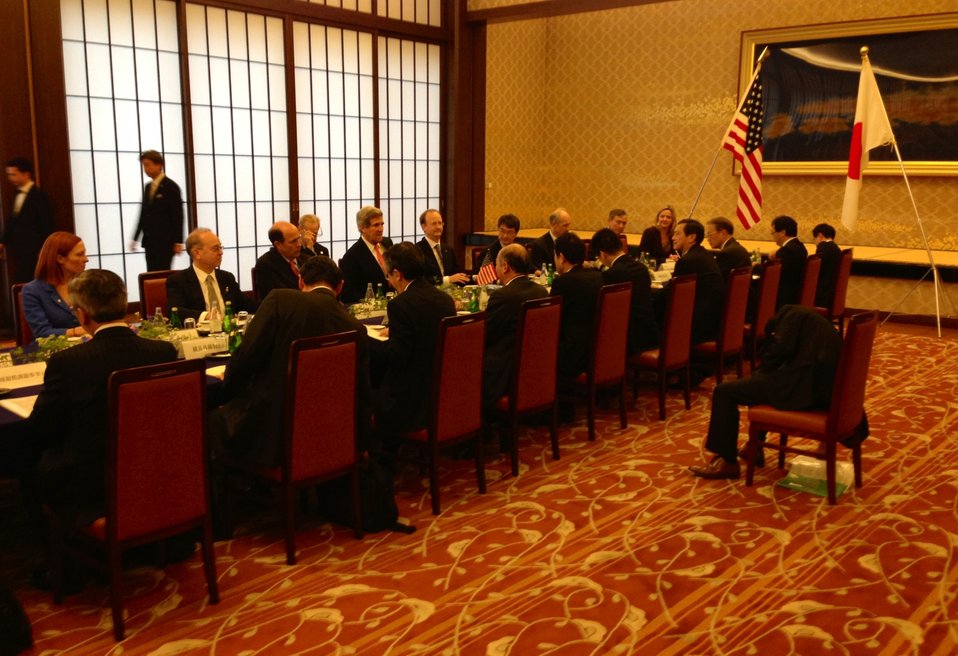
Secretary Kerry Meets with Japanese Foreign Minister Fumio Kushida

U.S. Secretary of State John Kerry holds a bilateral meeting with Japanese Foreign Minister Fumio Kushida in Tokyo, Japan, on April 14, 2013.